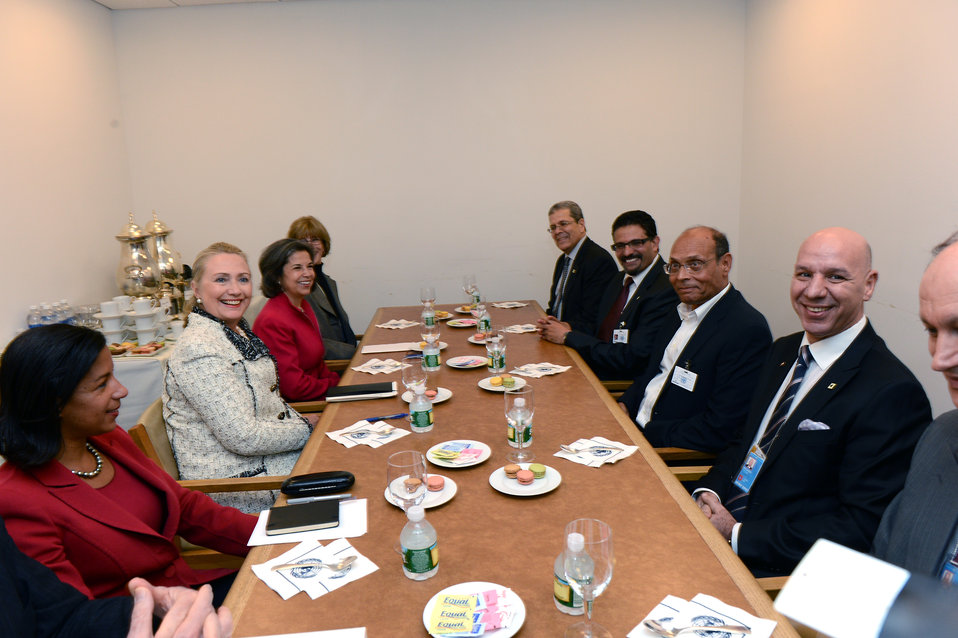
Secretary Clinton Meets With Tunisian President Marzouki

U.S. Secretary of State Hillary Rodham Clinton meets with Tunisian President Moncef Marzouki in New York, New York on September 26, 2012.